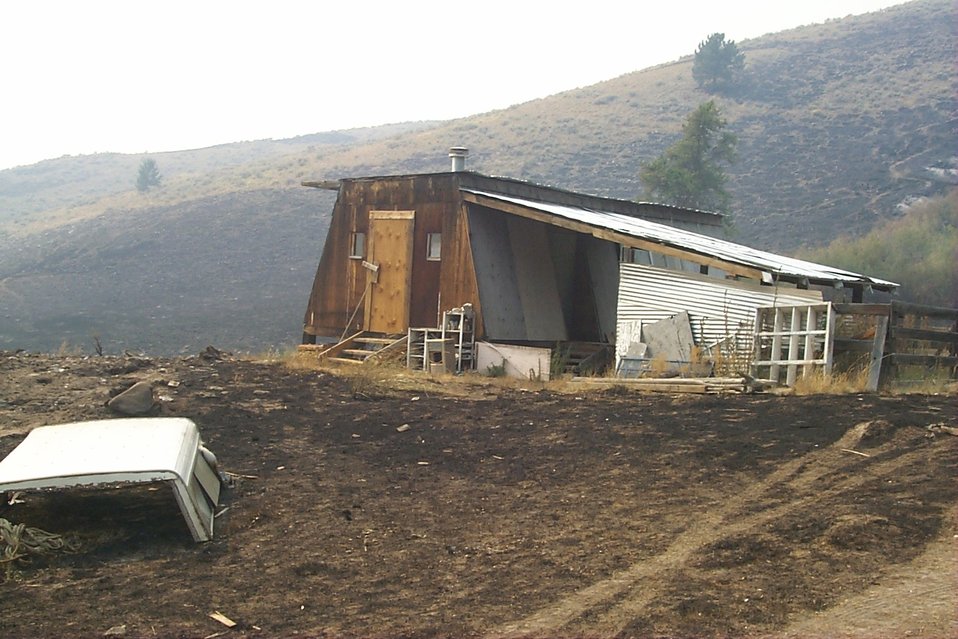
Urban interface Fire Clearwater Fire Salmon Field Office USRD Upper Snake River District